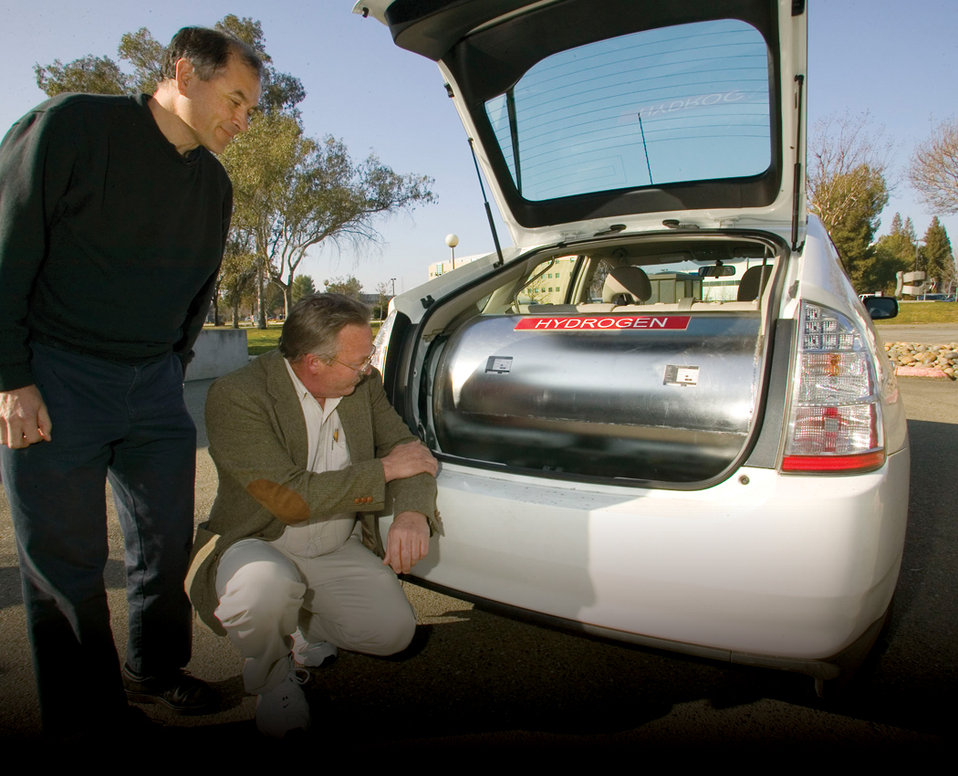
A cryogenic pressure vessel developed and installed in an experimental hybrid vehicle by a Lawrence Livermore National Laboratory research team can hold liquid hydrogen for six days without venting any of the fuel.

As compared to today's liquid hydrogen tanks capable of holding hydrogen for merely two to four days. The LLNL experimental hybrid vehicle demonstrated the longest driving distance on a single tank of hydrogen (650) miles. The recent thermal endurance experiments validate the key benefit of cryogenic pressure vessel: They deliver the high density of liquid of liquid hydrogen storage without the evaporative losses. This research is part of DOE's National Hydrogen Storage Project to demonstrate advanced hydrogen-storage materials and designs.